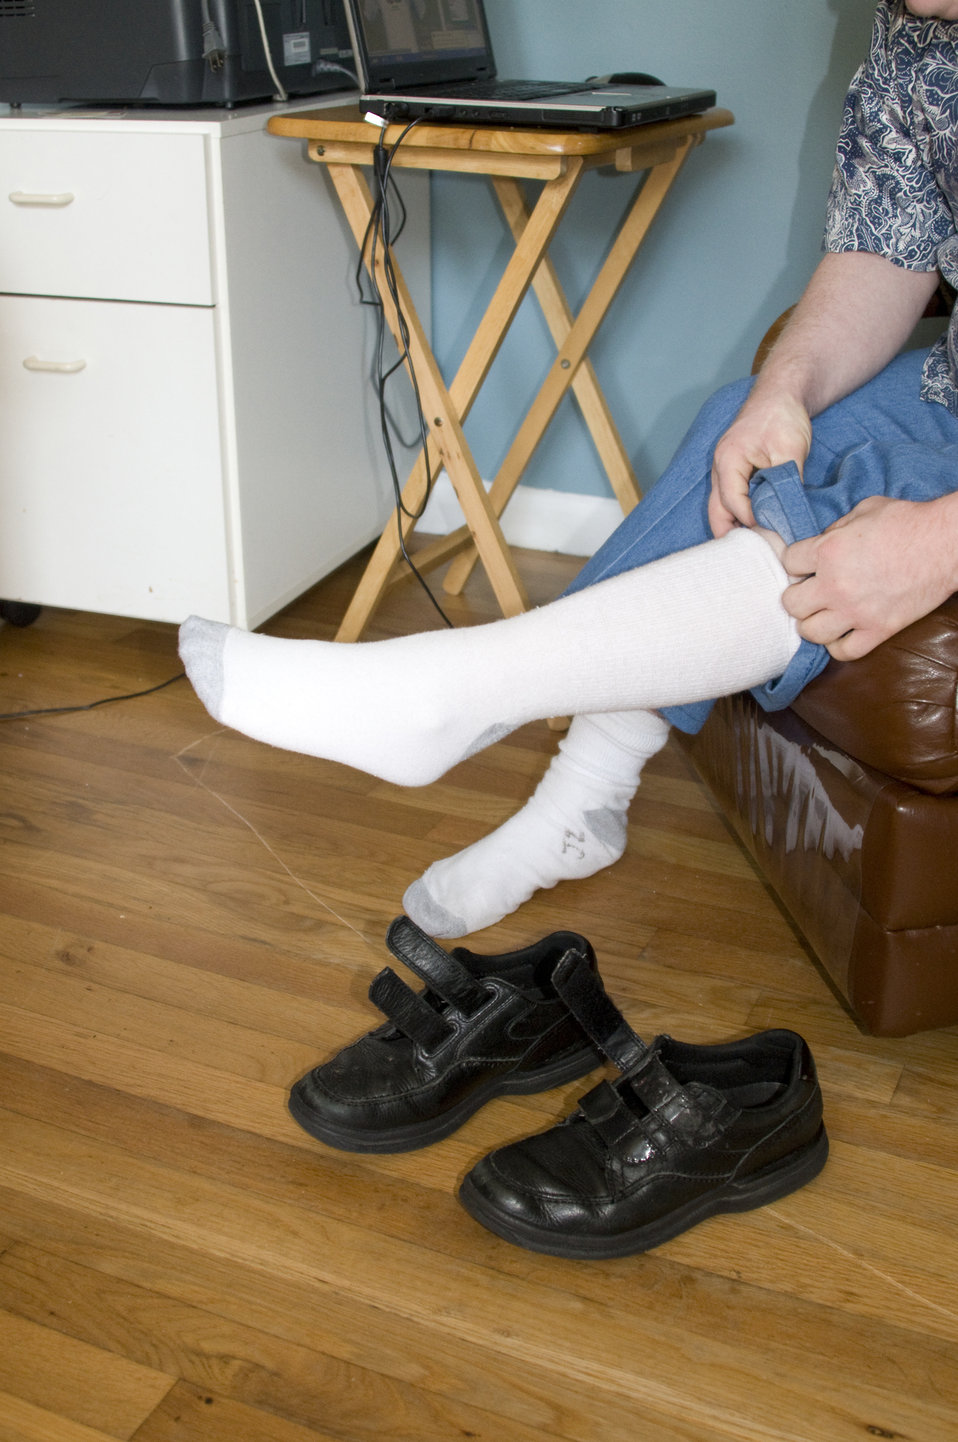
This image depicts an intellectually-challenged man in his home, sitting in a recliner, as he was donning his socks and shoes. Living with an intellectual disability does not necessarily mean existing in a non-functional state. There are many degrees of intellectual impairment ranging from an inability to function without assistance, to the ability to function independently, without assistance.